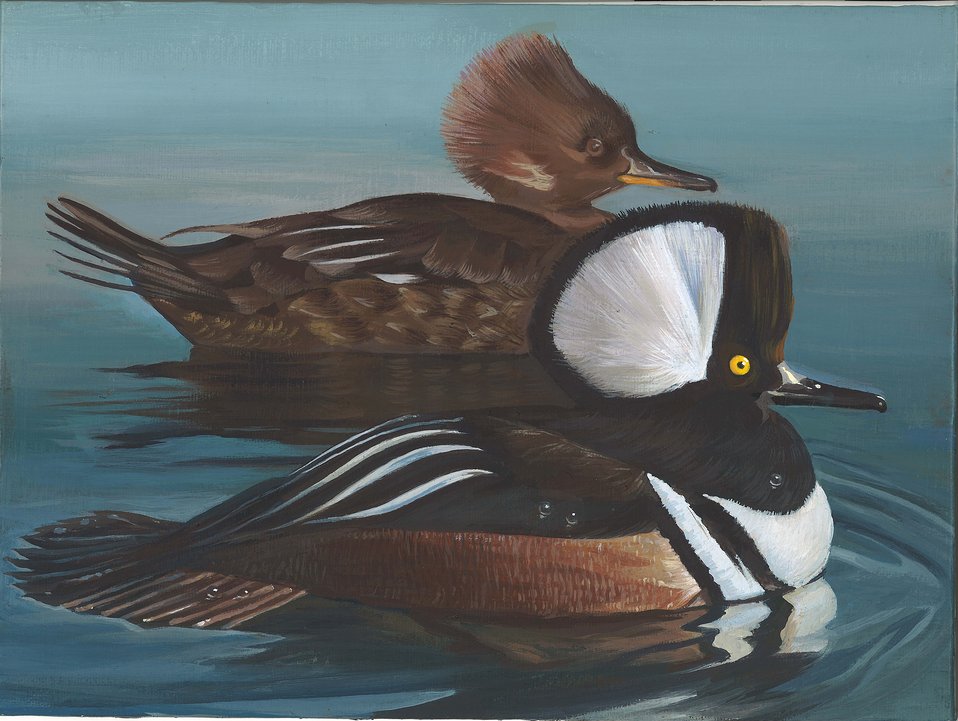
California

2012 Jr Duck Stamp Program
State Best of Show
California